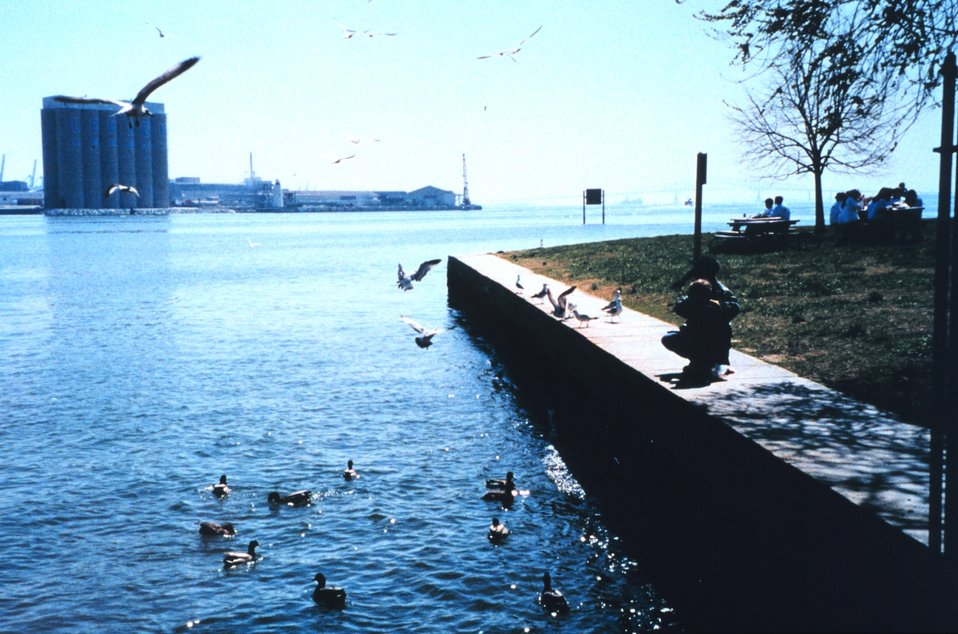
Volunteers helping clean up the wetlands and waterfront area around Fort McHenry in Baltimore Harbor. Stopping for lunch at the Fort McHenry picnic area.